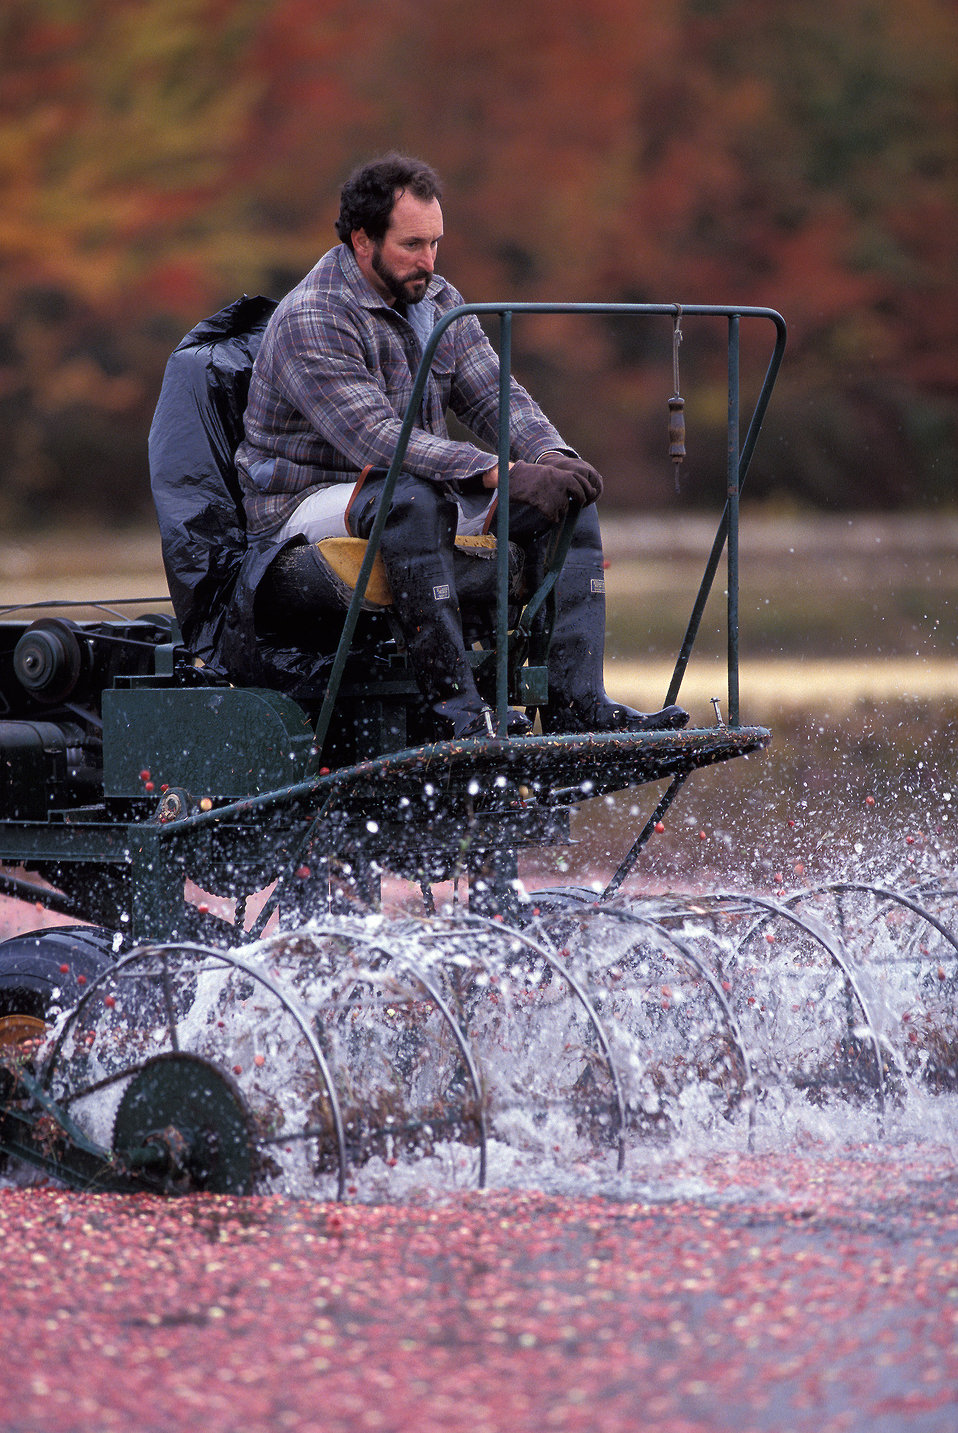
Rutgers University farm supervisor Richard DeStefano operates a ride-on water reel cranberry harvester at the Blueberry and Cranberry Research Center at Chatsworth, NJ.